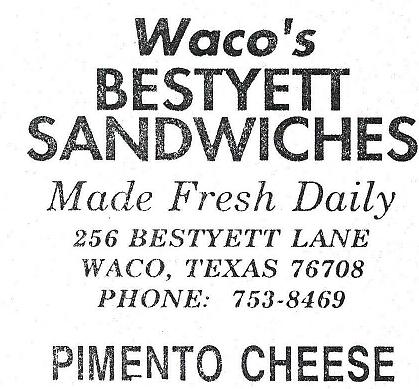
RECALLED - Waco’s Bestyett Sandwiches Pimento Cheese

April 8 2011 - Product Recall - Waco’s Bestyett Sandwiches issues a Voluntary Recall of Pimento Cheese Sandwiches and Chicken Salad Sandwiches due to Undeclared EGGS.